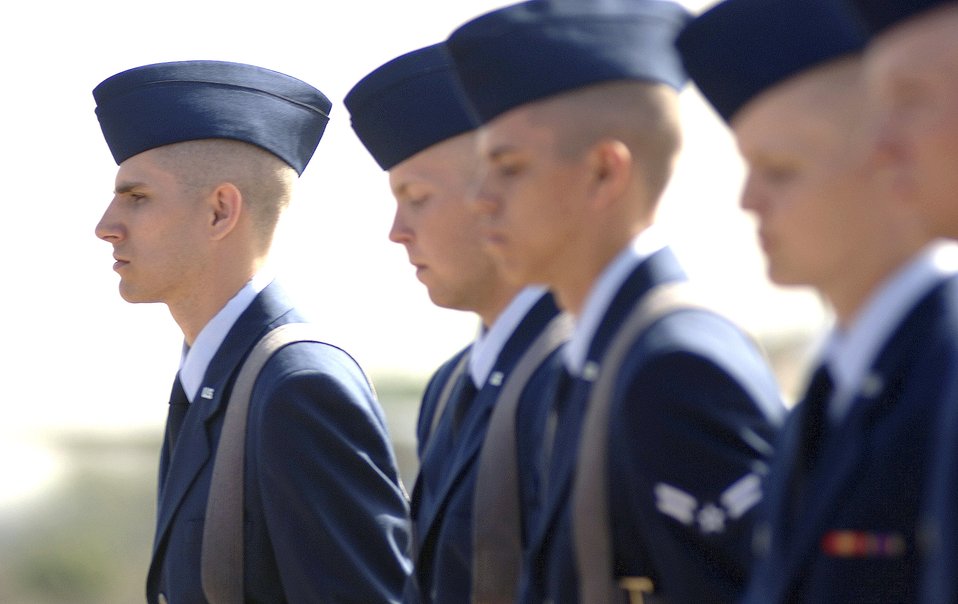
Chief reviews son's graduation

Airman Basic Lance Bowes marches alongside his fellow trainees during his basic training graduation parade at Lackland Air Force Base, Texas, Friday, March 10, 2006. Airman Bowes was assigned to the 322nd Training Recruit Squadron Flight 235.